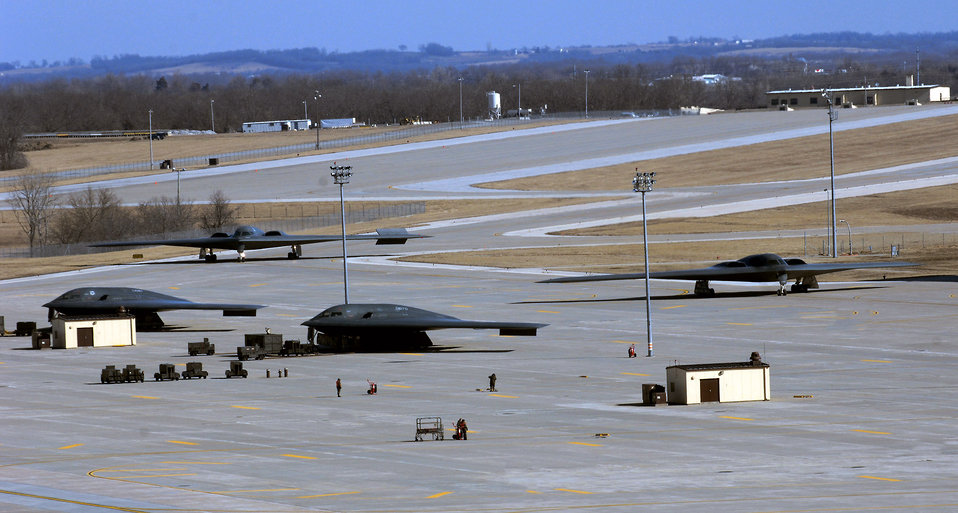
Follow the leader

Two B-2 Spirits taxi down the runway March 4 at Whiteman Air Force Base, Mo., marking the end of the first nuclear operational readiness exercise for 2008. The exercise prepared the base for a combined nuclear surety inspection and nuclear operational readiness inspection later this year.